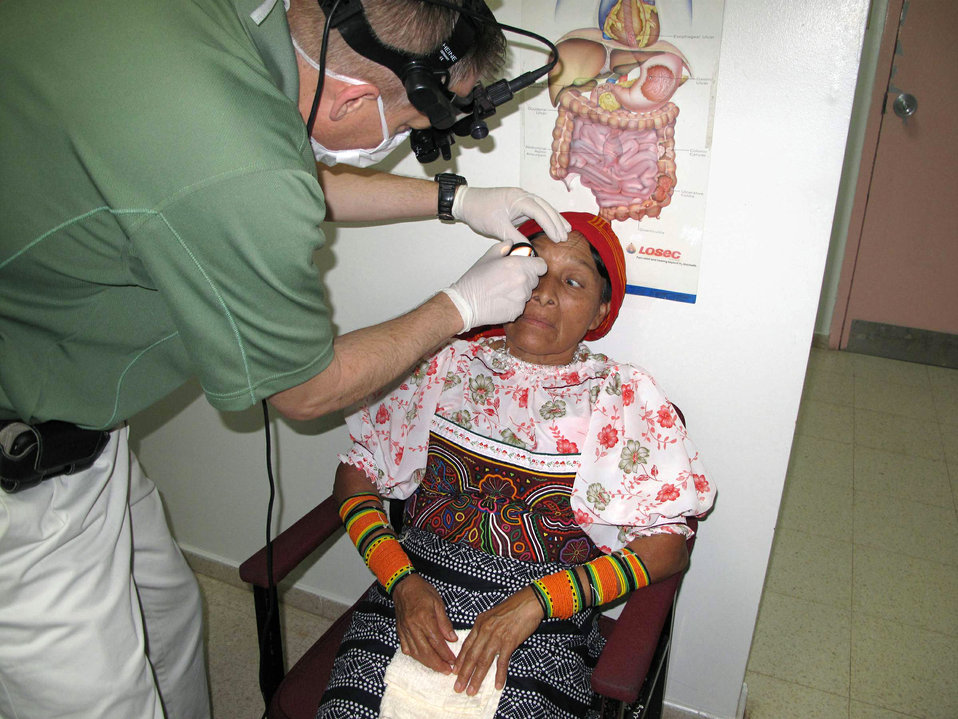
Wilford Hall doctors bring eye care to Panama patients

Col. (Dr.) Jonathan Briggs performs an eye screening on a Panamanian woman May 11 at La Regional Hospital, La Chorrera, Panama. A six-member team from the 59th Medical Wing's Ophthalmology Flight from Wilford Hall Medical Center at Lackland Air Force Base, Texas, went on a 13-day humanitarian mission to Panama to perform eye surgeries and exams on Panamanian patients who cannot afford to pay for their medical care. Doctor Briggs is an ophthalmologist with the 59th Surgical Specialties Squadron.